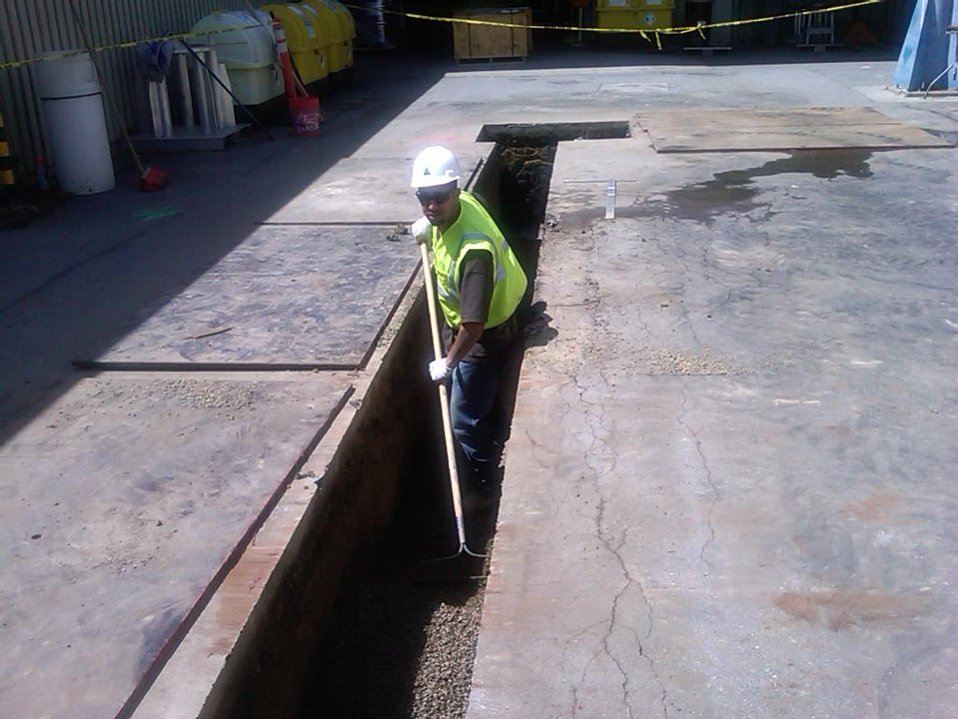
Recovery Act Supports Soil and Debris Cleanup, Groundwater Treatment at SLAC

Recovery Act workers are on track to remove more than 30,000 cubic yards of contaminated soil and debris at the SLAC National Accelerator Laboratory by September 2011.
The Recovery Act invested $14.3 million in legacy cleanup activities at SLAC. In addition to removing contaminated soil and debris that is shipped to local disposal facilities, Recovery Act workers installed three new groundwater treatment systems.